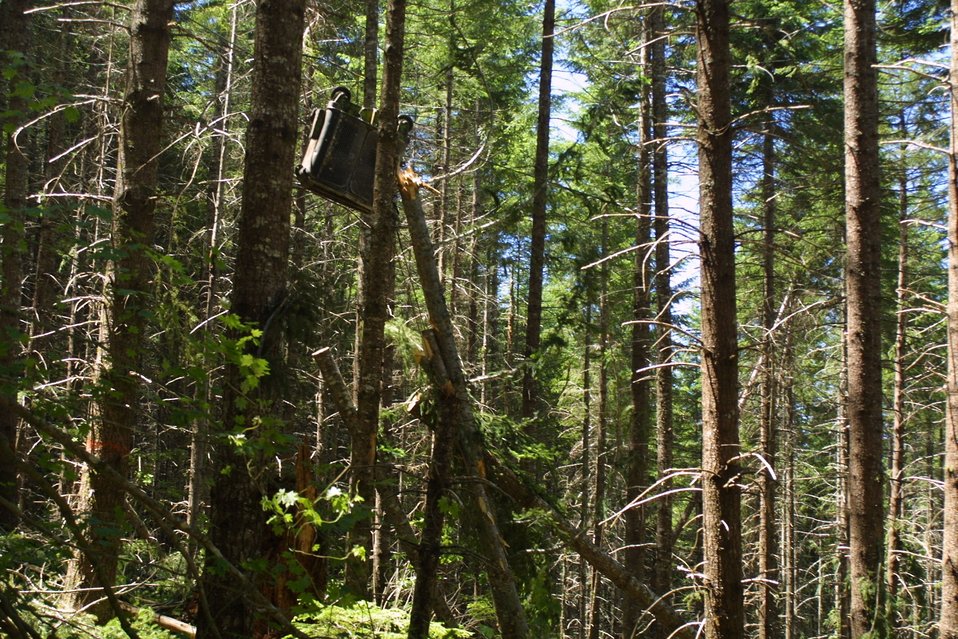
Camas East Timber Sale in Late Successional Reserve.